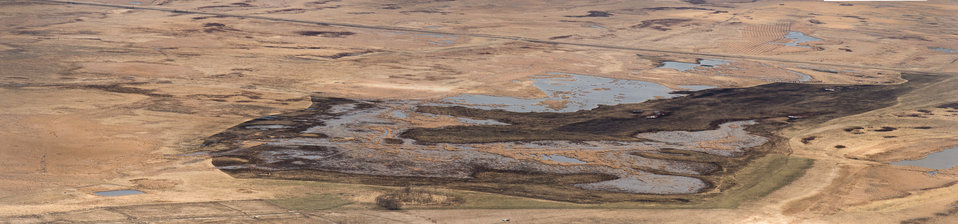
Virtual panorama of a 2012 prescribed burn area, in the Glacial Ridge National Wildlife Refuge with U.S. Department of Agriculture (USDA), Wetland Reserve Program (WRP) and Public Law PL83-566 Small Watershed Program (PL-566) participants' lands in Polk County, MN, on Tuesday, April 30, 2013. For information about this and other programs from the USDA Red River Basin Initiative (RRBI) please see www.mn.nrcs.usda.gov/news/features13/RRBI.html.